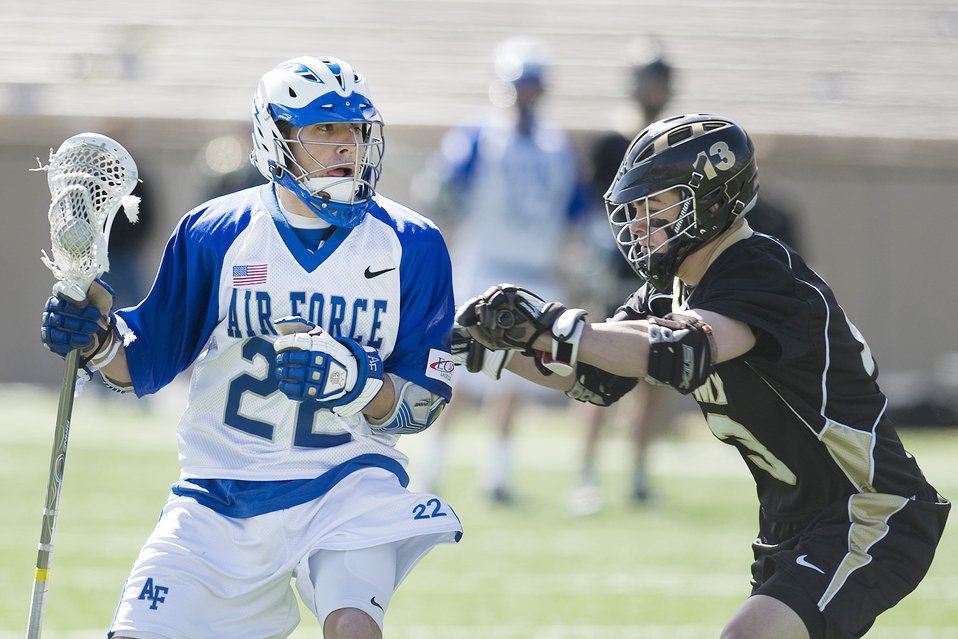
Lacrosse: Falcons defeat Black Knights

Air Force sophomore Adam Paranka absorbs contact from Army defender Sam Harrison during the March 13, 2010, lacrosse game held at the U.S. Air Force Academy's Falcon Stadium in Colorado. Paranka had 2 assists as the Falcons defeated the Black Knights 8-7 in overtime.